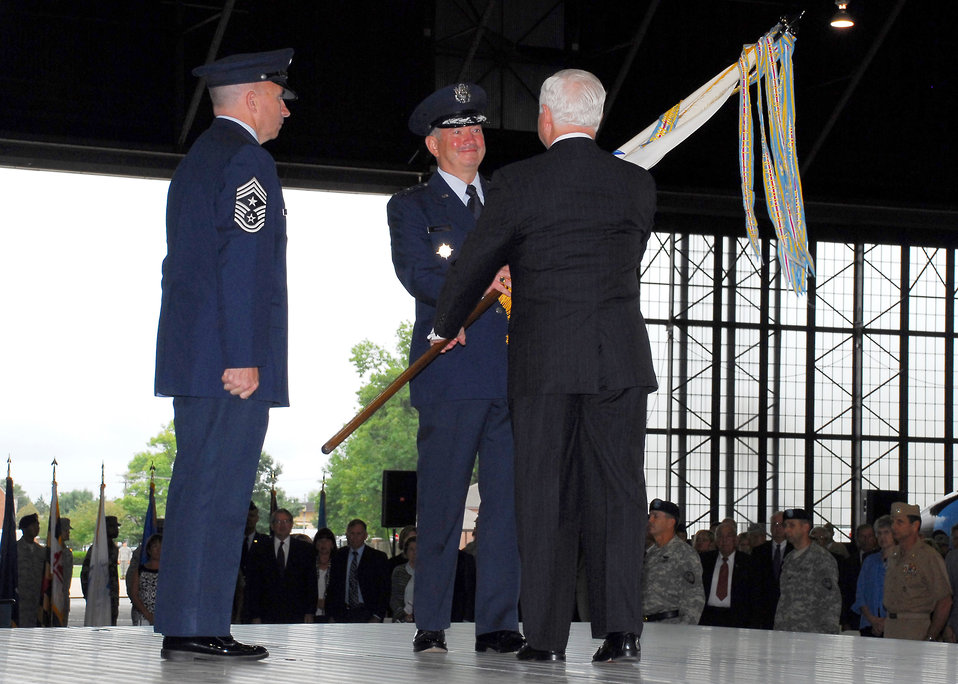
McNabb assumes command of U.S. Transportation Command

Gen. Duncan J. McNabb accepts the U.S. Transportation Command flag from Secretary of Defense Robert M. Gates Sept. 5, during an assumption of command ceremony at Scott Air Force Base, Ill. At left is Chief Master Sgt. Kenneth L. McQuiston, USTRANSCOM command chief master sergeant, who first presented the flag to Secretary Gates.